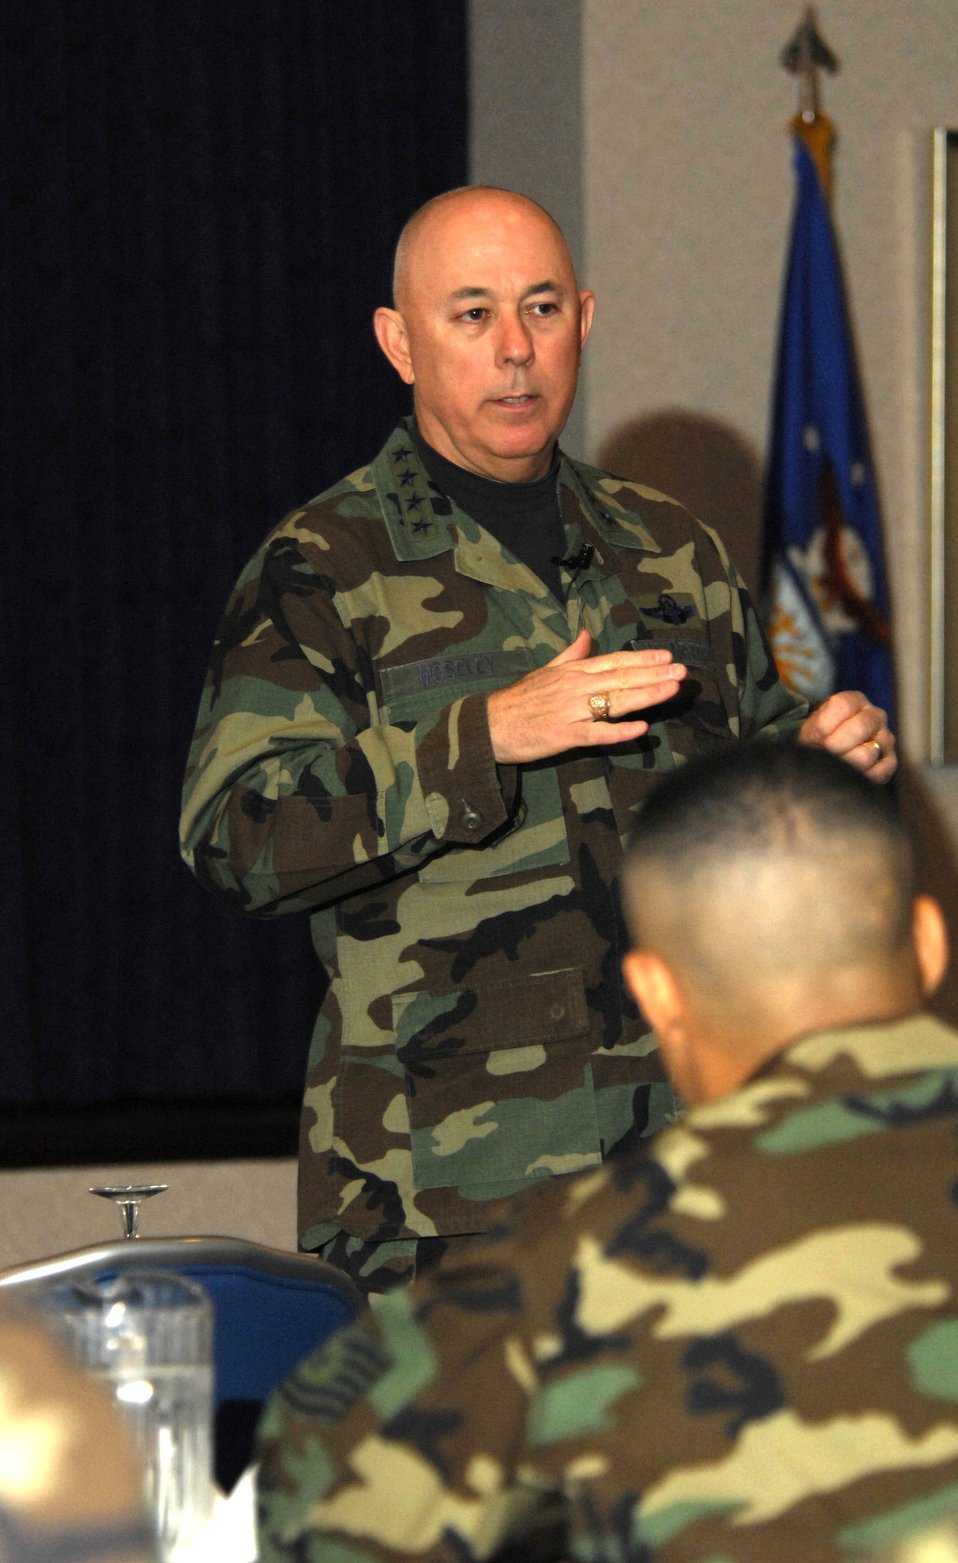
Airmen learn new perspectives in leadership

Air Force Chief of Staff, General T. Michael Moseley spoke to more than 50 NCOs from around the Air Force attending the NCO Forum held March 12-13 at Bolling Air Force Base, Washington D.C. The general spoke to the Airmen about policy changes, recapitalization, the